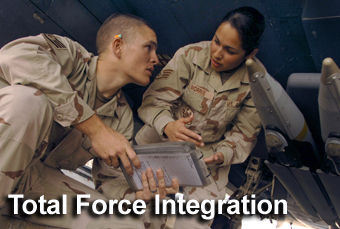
Chief of staff announces major total force integration steps

The total force integration effort is designed to cement more than 680,000 active-duty, Air National Guard, Reserve Airmen and civilian employees into an even more capable and efficient Air Force.